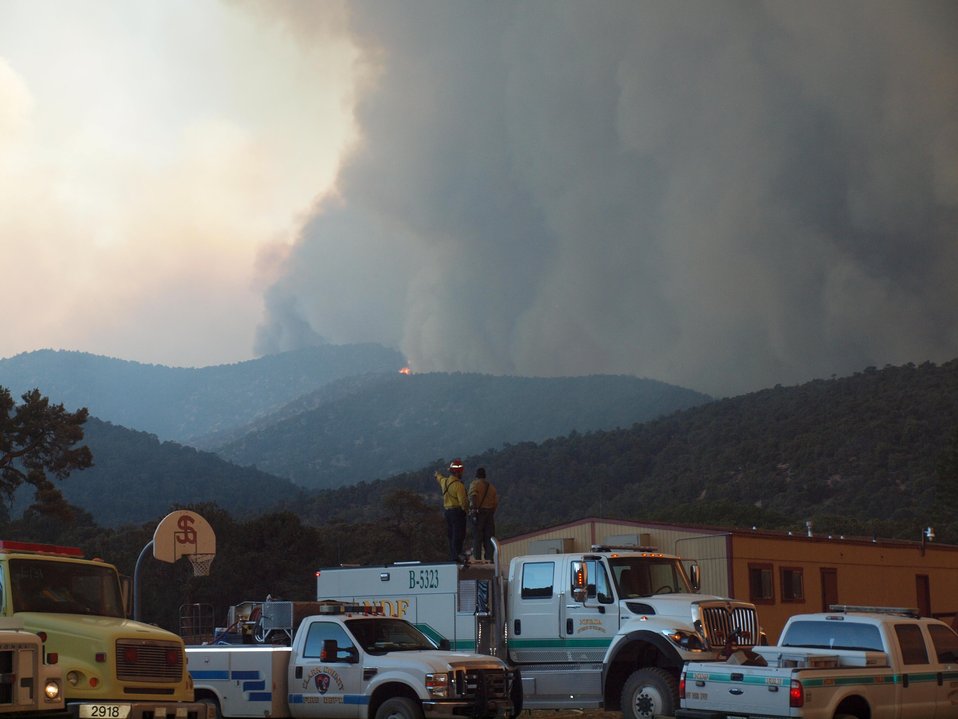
The Carpenter Fire in the Toiyabe National Forest near Humboldt, NV was caused by a lightning strike on Jul. 1, 2013. The fire has consumed nearly 27,881acres and is presently 70% contained.